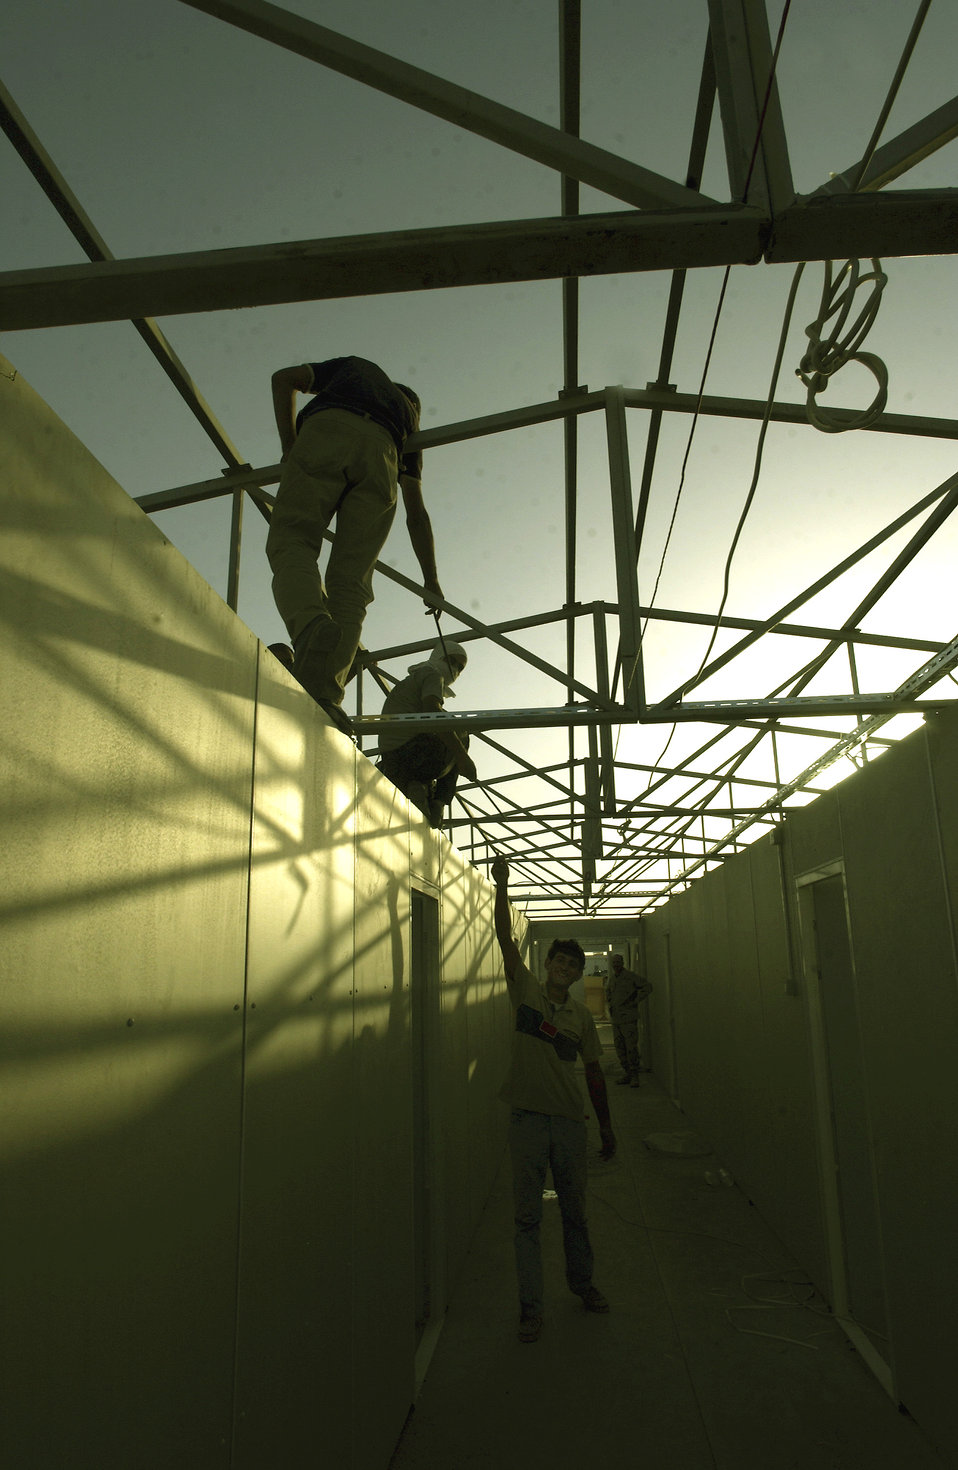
New dorms for airmen

KIRKUK AIR BASE, Iraq -- Contractors work into the evening to complete a dormitory that will house up to 1,664 airmen in 13 buildings with six to eight people to a room. The new dorms are scheduled to open Dec. 1. The units were originally purchased by U.S. Air Forces in Europe and earmarked for construction at Incirlik Air Base, Turkey, for Operation Northern Watch.